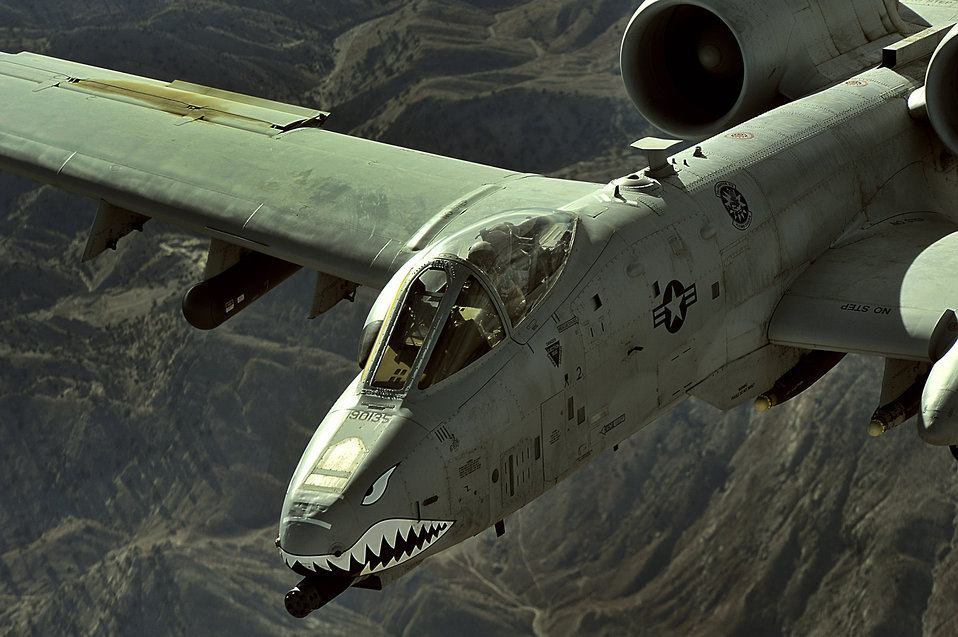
Flying high in the sky

An A-10 Thunderbolt II flies a close-air-support mission over Afghanistan on Nov. 7. The A-10 has excellent maneuverability at low air speeds and altitude, and are highly accurate weapons-delivery platforms.